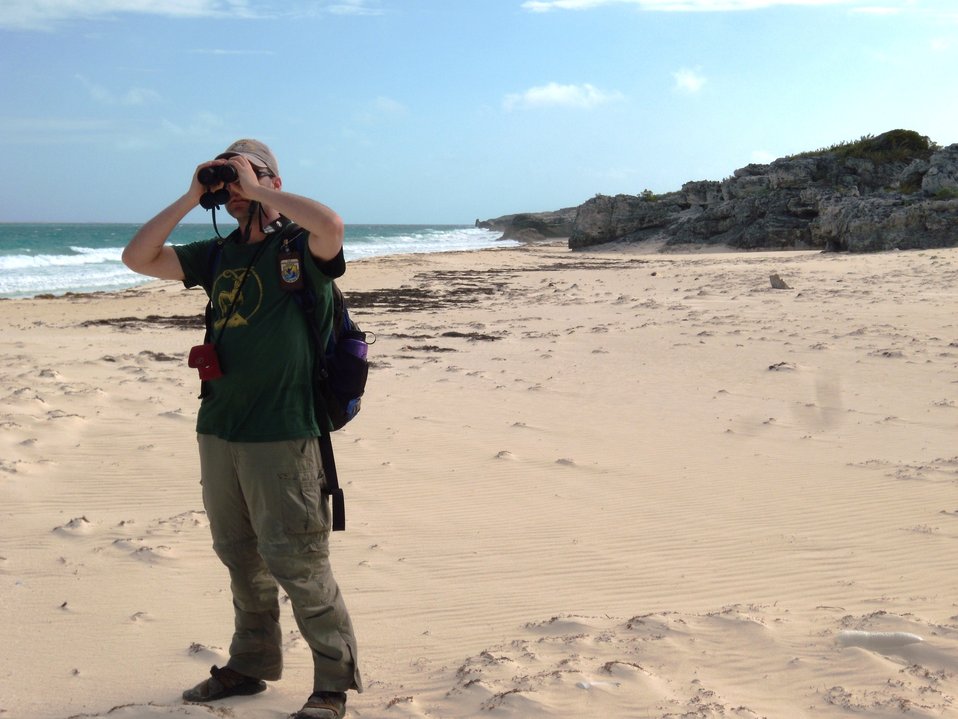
Caleb Spiegel, U.S. Fish and Wildlife Service, Division of Migratory Birds

On Berry Islands